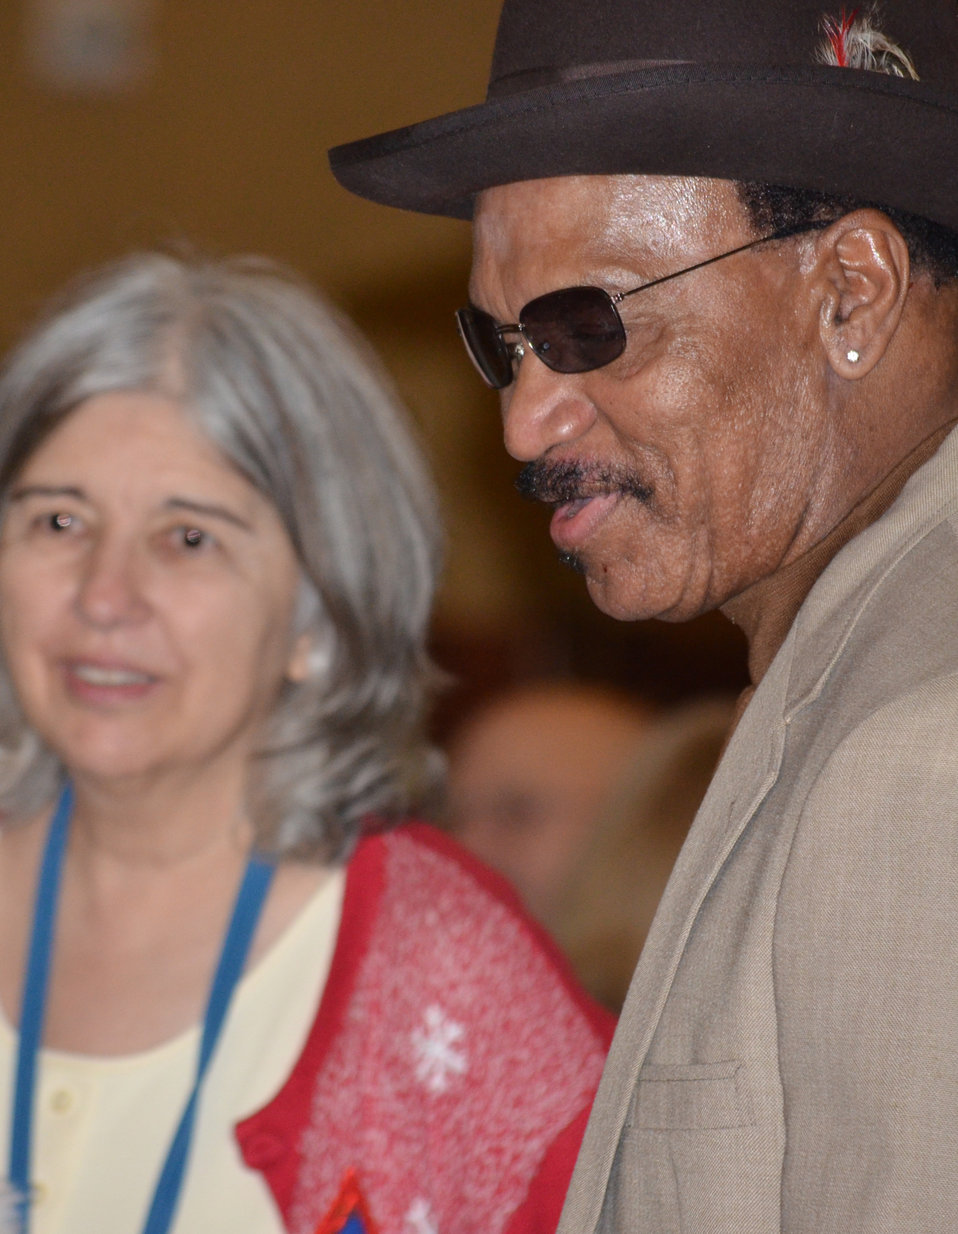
Sacramento District Holiday Party 2011